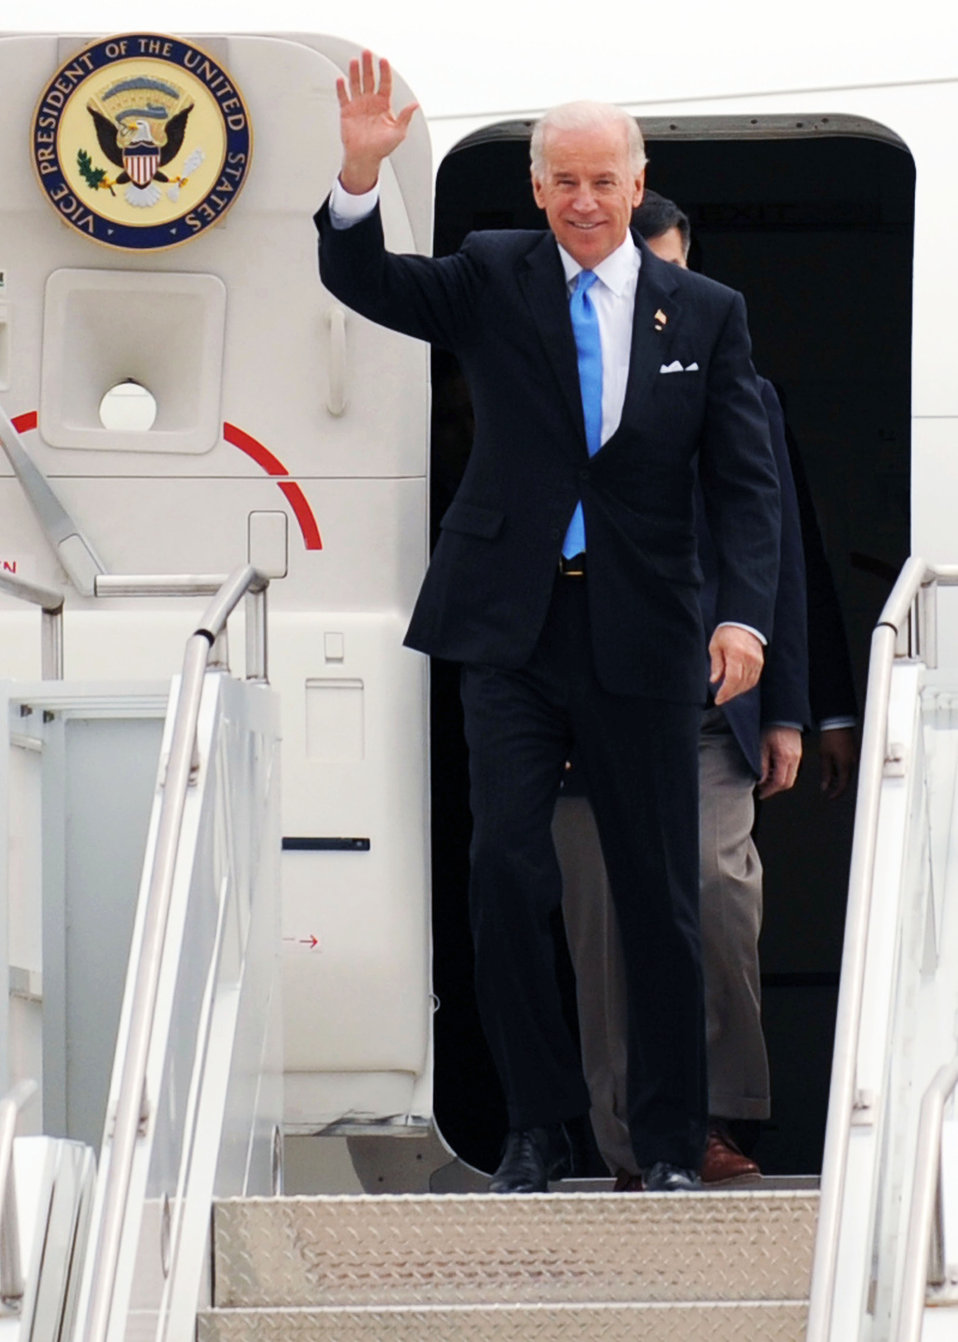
Vice president visits Whiteman

Vice President Joe Biden arrives at Whiteman Air Force Base, Mo., April 16 to show the administration's support for the troops. He later visited Jefferson City and the University of Missouri-St. Louis to highlight progress of the Recovery Act.